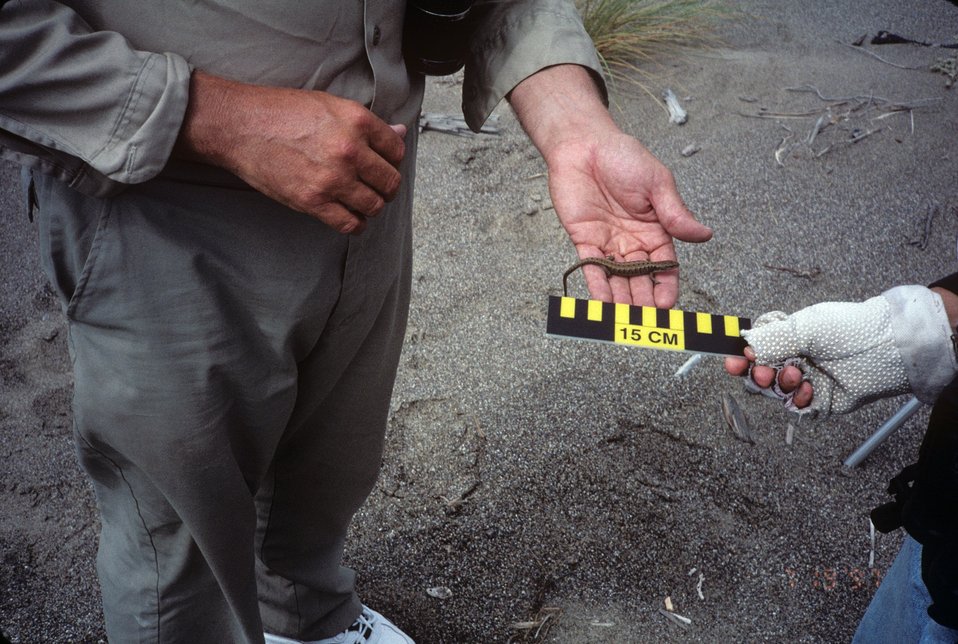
Point Reyes Great Beach south end. A beach-going lizard found in the dunes.